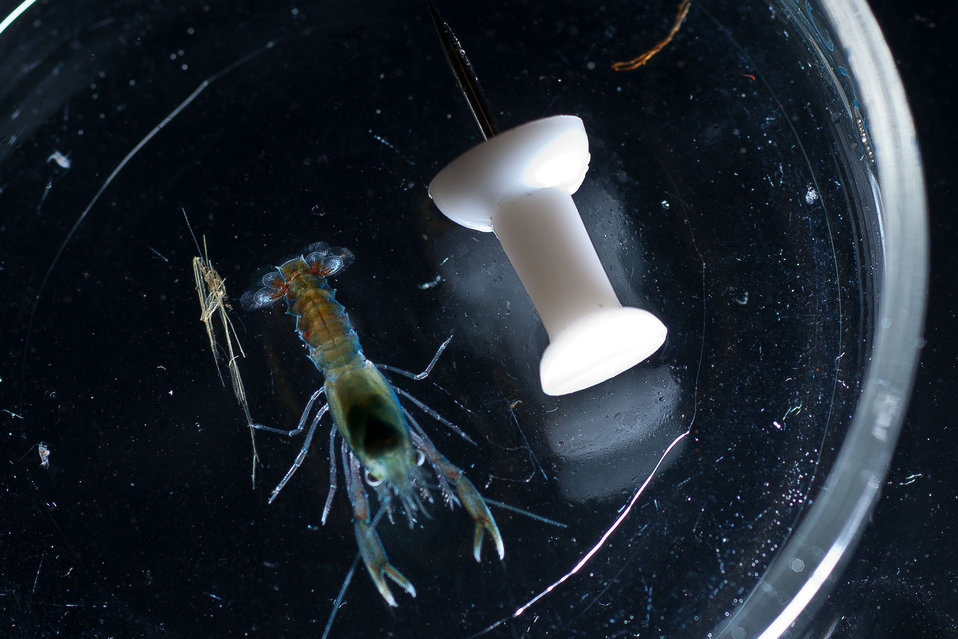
August 6, 2011 A really big thumb tack! We grabbed what we could for size comparison

Not the typical sized lobster you might see! This was a postlarval or 'baby' lobster we found off Plum Island, MA during a plankton tow, which collected small organisms that were 10' below the surface.